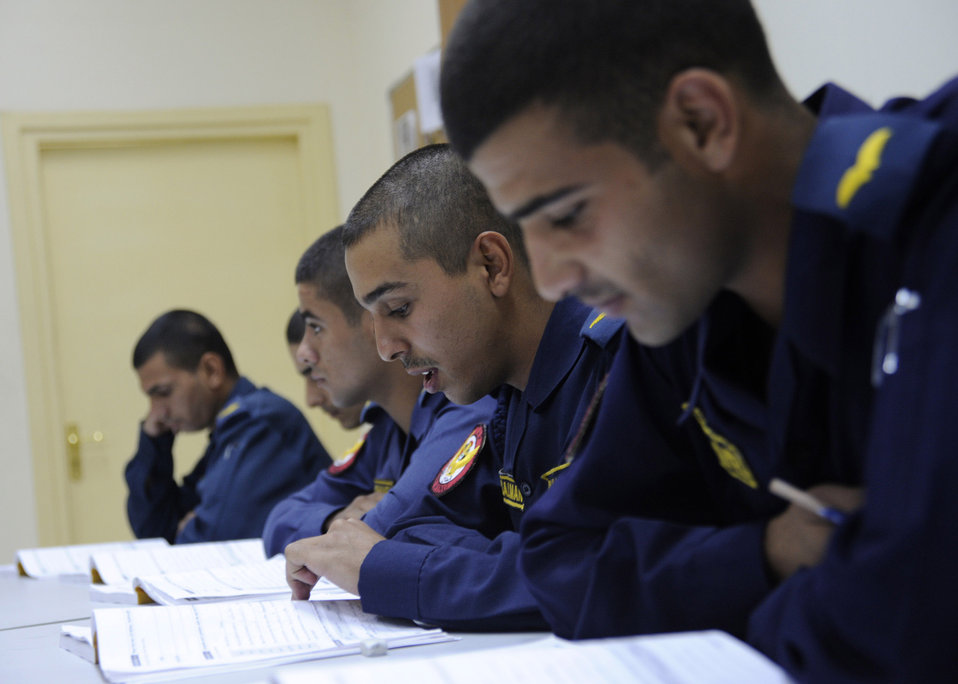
American Airman teaches Iraqi air force cadets

Iraqi cadets work on a lesson during their English language course at the Iraqi air force training wing at Forward Operating Base Rustamiyah, Iraq. A cadet that earns a 70 percent or higher on the English proficiency test will have the opportunity to enter undergraduate pilot training at Kirkuk Air Base, Iraq.